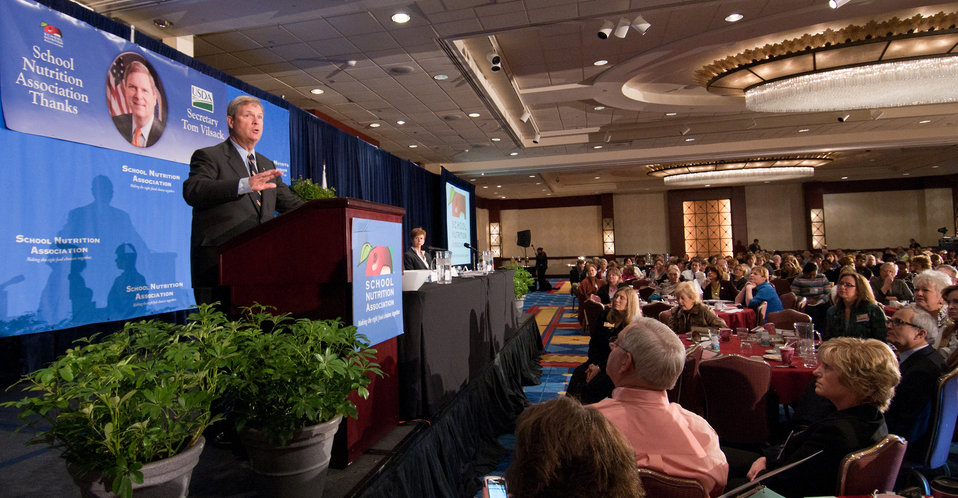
U.S. Department of Agriculture Secretary Tom Vilsack spoke with and took questions during the School Nutrition Association’s closing general session of their 39th annual Legislative Action Conference at the J.W. Marriott Hotel in Washington, D.C., on Wednesday, March 9, 2011. The theme of the Secretary Vilsack’s speech was “The Realities of Implementing New Meal Patterns and Operational Requirements.” Of the many things he spoke about, he also shared with the audience how his motivation came from how personally important it was to him, that his adopted mother made a lunch for him everyday he went to school despite the challenges of her alcoholism and family struggles. He also talked about the Healthy, Hunger-Free Kids Act of 2010 (Public Law 111-296 and how chefs were involved in the development of the USDA’s proposed updated nutrition standards for school meals development.